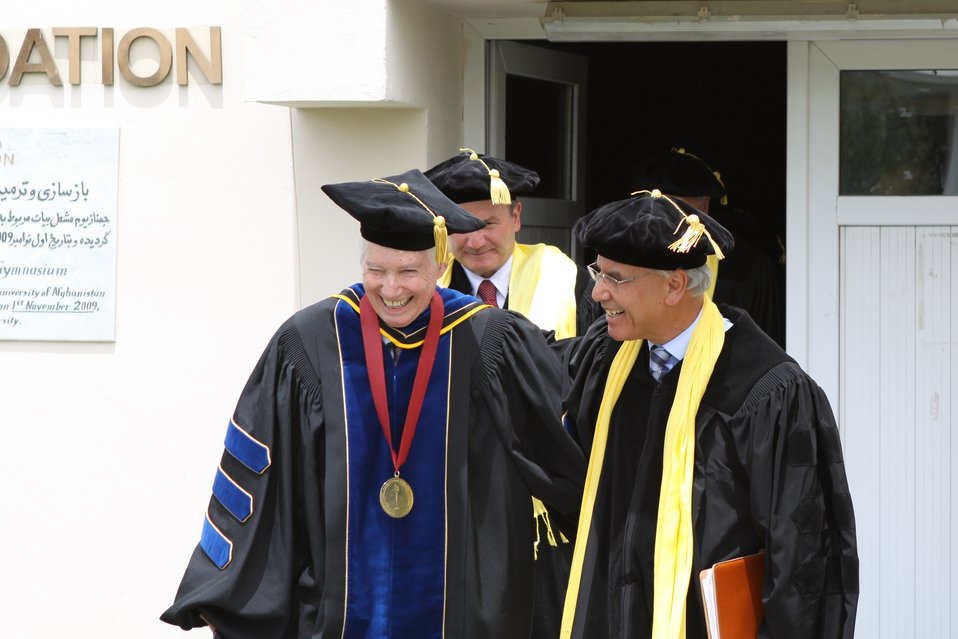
100526 AUAF Graduation 321